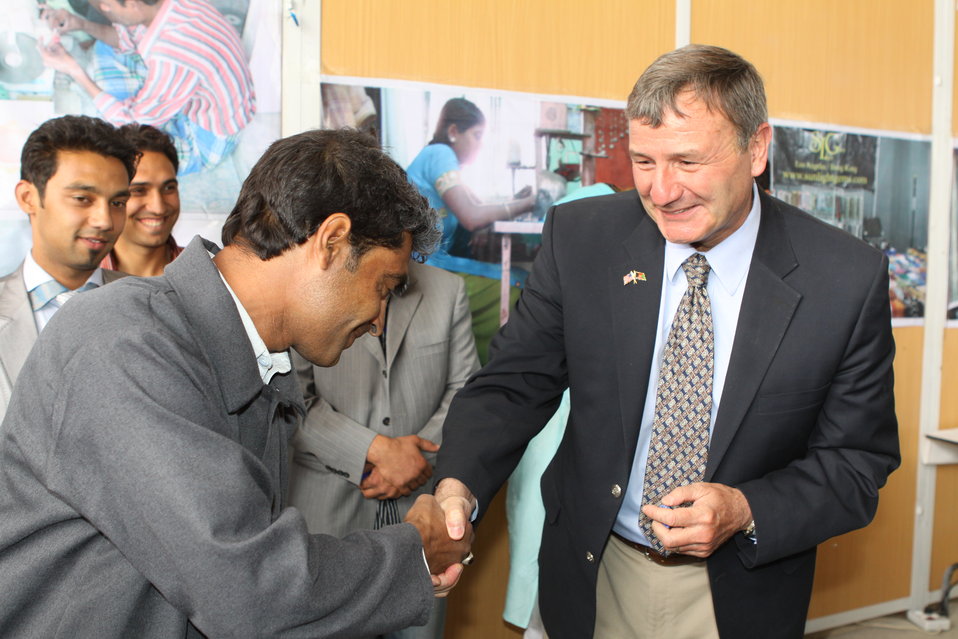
100525 Hirat Marble Conference 539